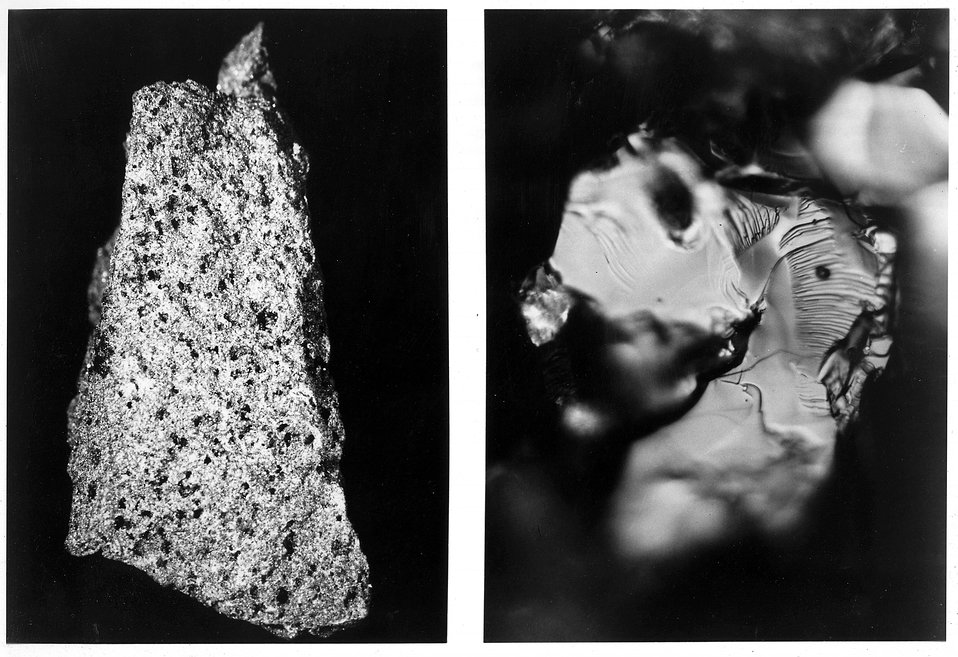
12-GRAM PIECE OF MOON SENT TO BROOKHAVEN NATIONAL LABORATORY
FOR EVALUATION under a NASA agreement.